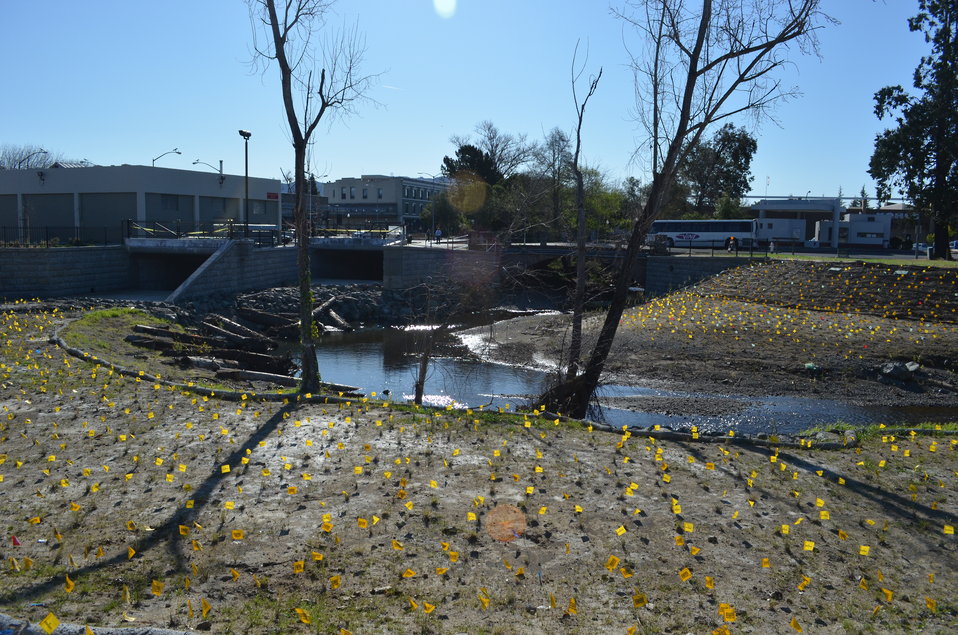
Native species sprout up as part of Napa Creek habitat restoration

Native species plants begin to sprout up along the banks of the widened Napa Creek in Napa, Calif., March 7, 2012. The plantings will provide shade and additional habitat for fish and other river wildlife once they reach maturity. The Corps is also installing box culverts – tunnels large enough for a car to drive through – to channel flood water from the creek directly to the Napa River and away from homes and businesses. The plantings and culverts are part of the $14.8 million Napa Creek project, funded by the American Recovery and Reinvestment Act of 2009; a joint effort of the U.S. Army Corps of Engineers Sacramento District, the city of Napa, and the Napa Flood Control and Water Conservation District to reduce the flood risk for the city.